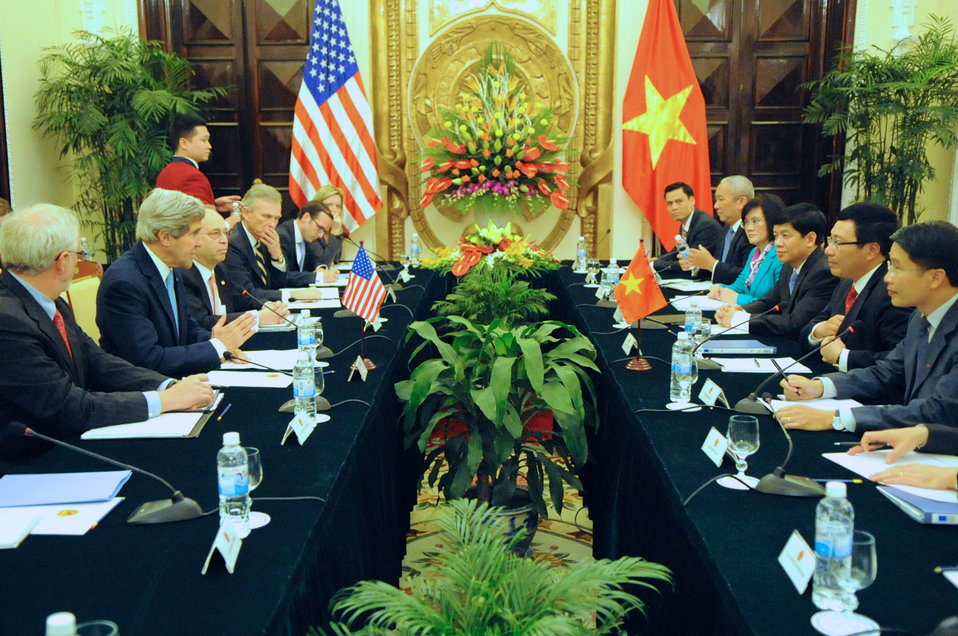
Secretary Kerry Holds a Bilateral Meeting With Vietnamese Foreign Minister Minh

U.S. Secretary of State John Kerry and Vietnamese Foreign Minister Pham Binh Minh sit across from each other before a bilateral meeting in Hanoi, Vietnam, on December 16, 2013.